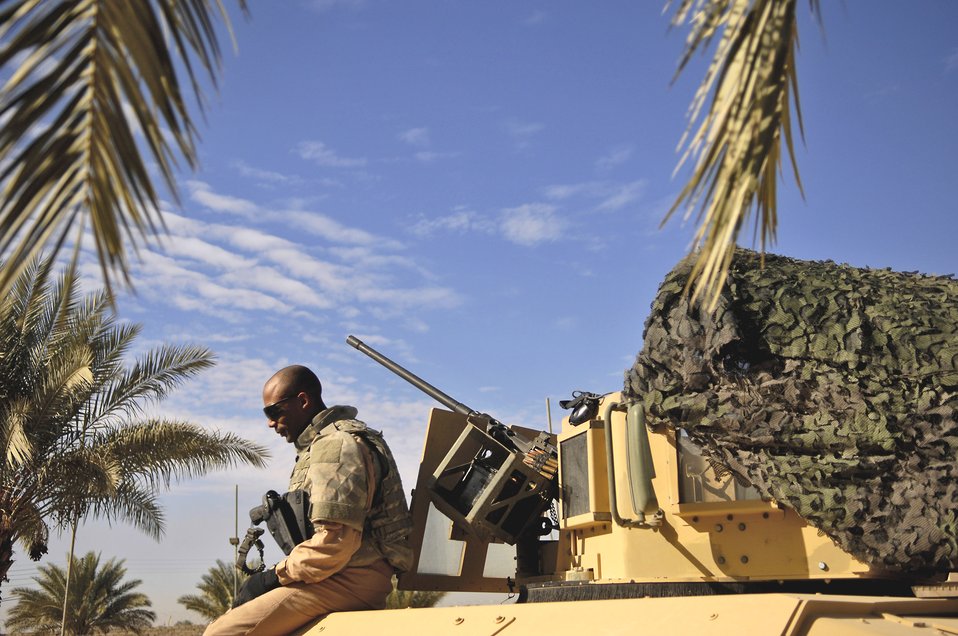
Taking a breather

Senior Airman Juwan Young rests before patrolling sections of Rasheed, Iraq, Feb. 23. He is deployed to nearby Sather Air Base.